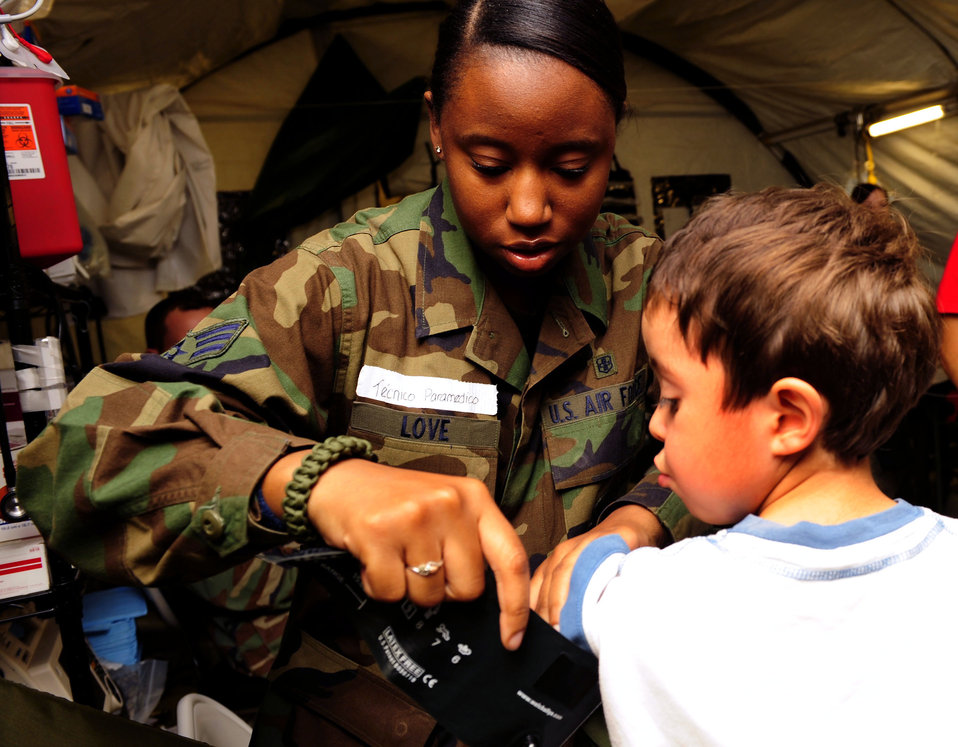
Airman cares for Chilean child

Senior Airman Kahliha Love checks the vital signs of a Chilean child at the expeditionary hospital March 20, 2010, in Angol, Chile. About 60 medical Airmen are working alongside local Chilean medics to provide support to meet the daily medical needs of the 110,000 people in the region. The local hospital in Angol was deemed structurally unsound after an 8.8-magnitude earthquake Feb. 27, 2010. Airman Love is an aerospace medical technician assigned to the 81st Medical Operating Squadron at Keesler Air Force Base, Miss.